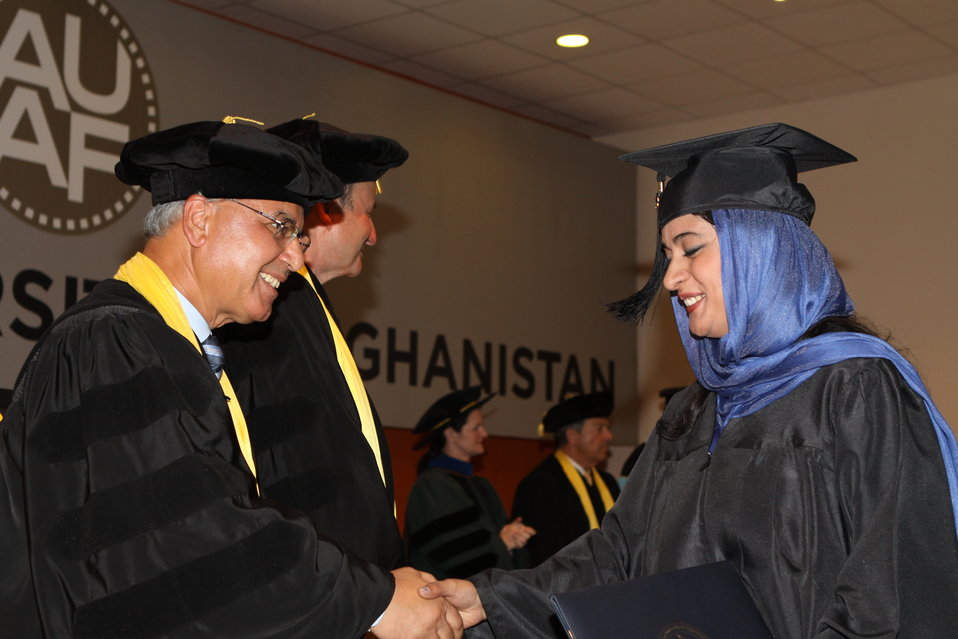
100526 AUAF Graduation 296